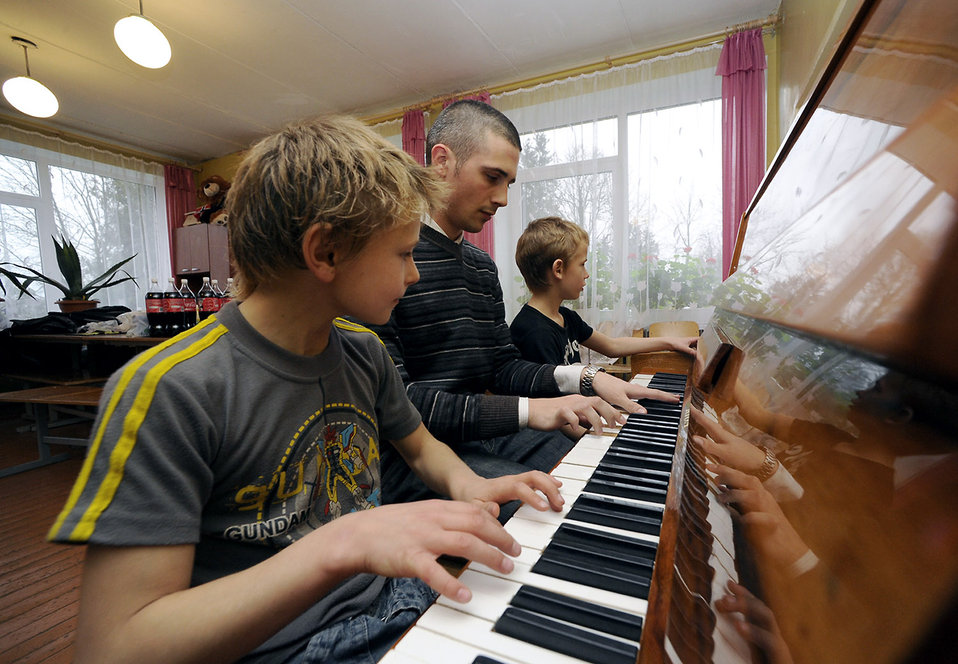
Airmen reach out to children's home in Lithuania

Airman 1st Class Kirk Rodgers shares his musical talent with two children from the District Vijurkai Children's Home Nov. 15 in Vijurkai, Lithuania. More than 20 Airmen from Royal Air Force Lakenheath, England, spent time with the children. Airman Rodgers is a 493rd Expeditionary Fighter Squadron network operations technician.